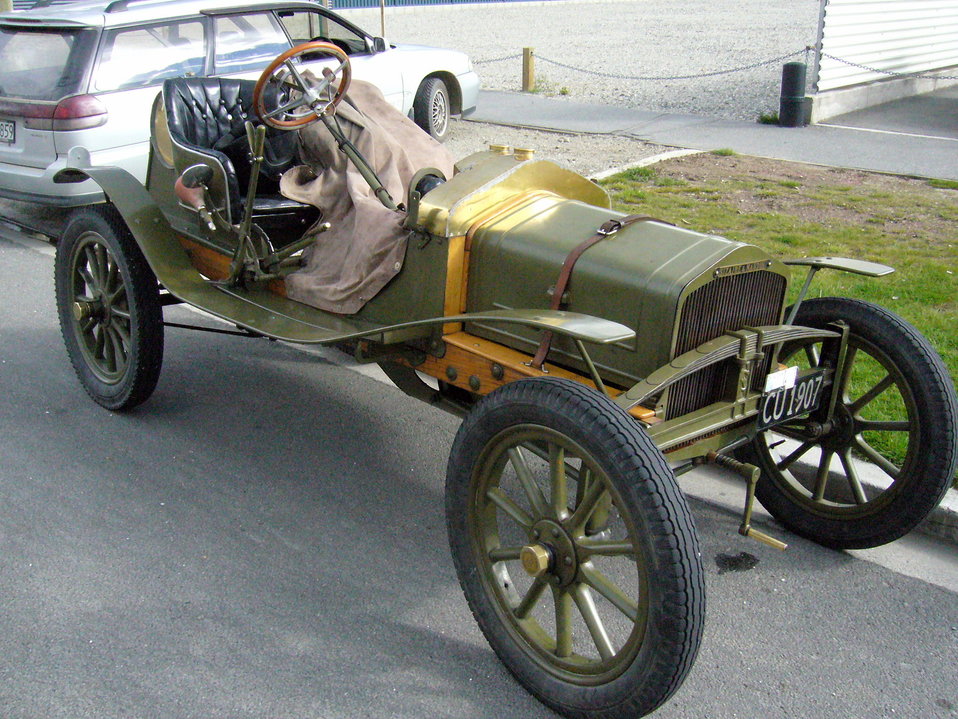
1907 single cylinder Sizaire & Naudin in daily use